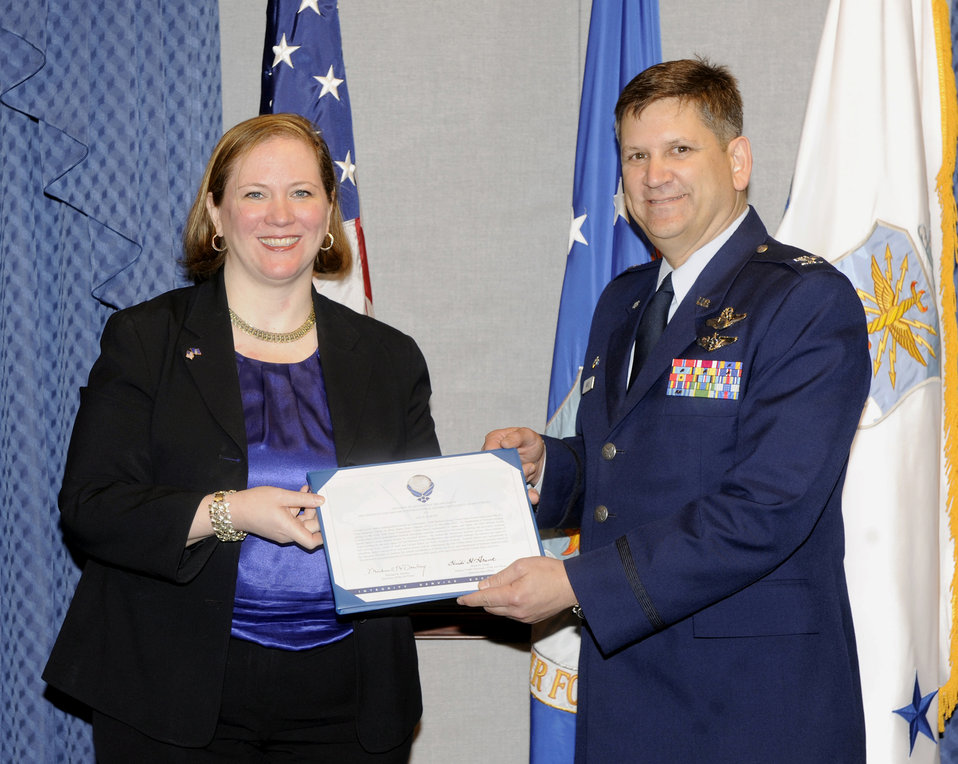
Excellence awarded

Under Secretary of the Air Force Erin Conaton presents the Air Force's
International Affairs Excellence Award to Col. Lee Harvis during a ceremony
held in the Pentagon in Washington, D.C., on May 23, 2012. Harvis currently
commands the 374th Medical Group at Yokota Air Base, Japan.